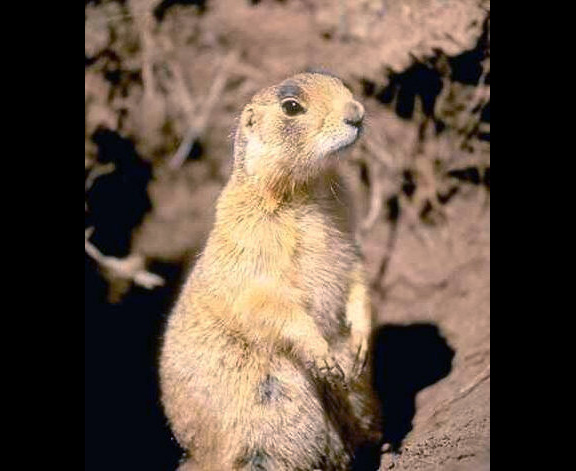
Prairie dog.